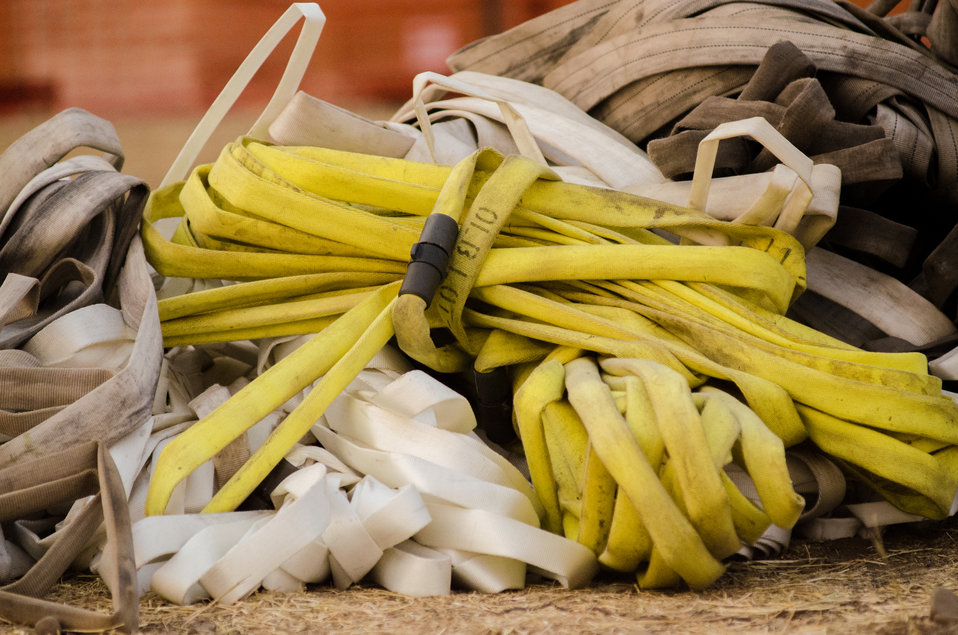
Used fire hoses are left at a hose winding station, near the supply cache, where they will be inspected for serviceability and if good, a machine will be used to efficiently roll the collapsible hoses into a neat roll, during the Beaver Creek Fire, west of Hailey, ID, in the U.S. Department of Agriculture (USDA) Forest Service (FS) and Sawtooth National Forest and Bureau of Land Management (BLM), on Wednesday, Aug 21, 2013. Structure protection at the scale of this fire often threatens homes, infrastructure, sacred and historic locations, requiring the use of miles of hose to preposition hand lines (water hoses) in the event of fire fighting and for sprinklers to keep remote homes, structures surrounding areas wet.